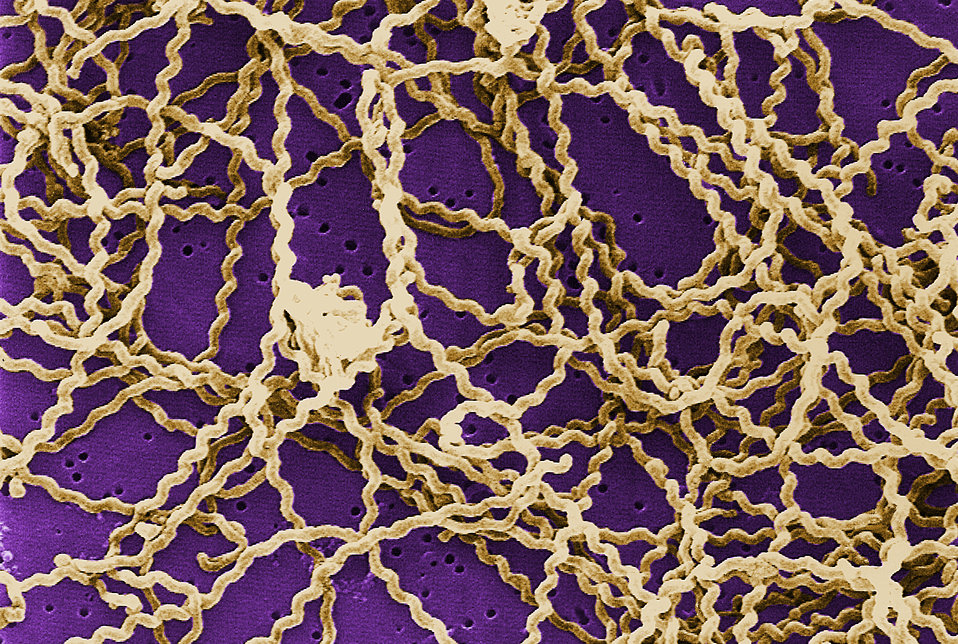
This scanning electron micrograph (SEM) depicts a number of Leptospira sp. bacteria atop a 0.1. �m polycarbonate filter.